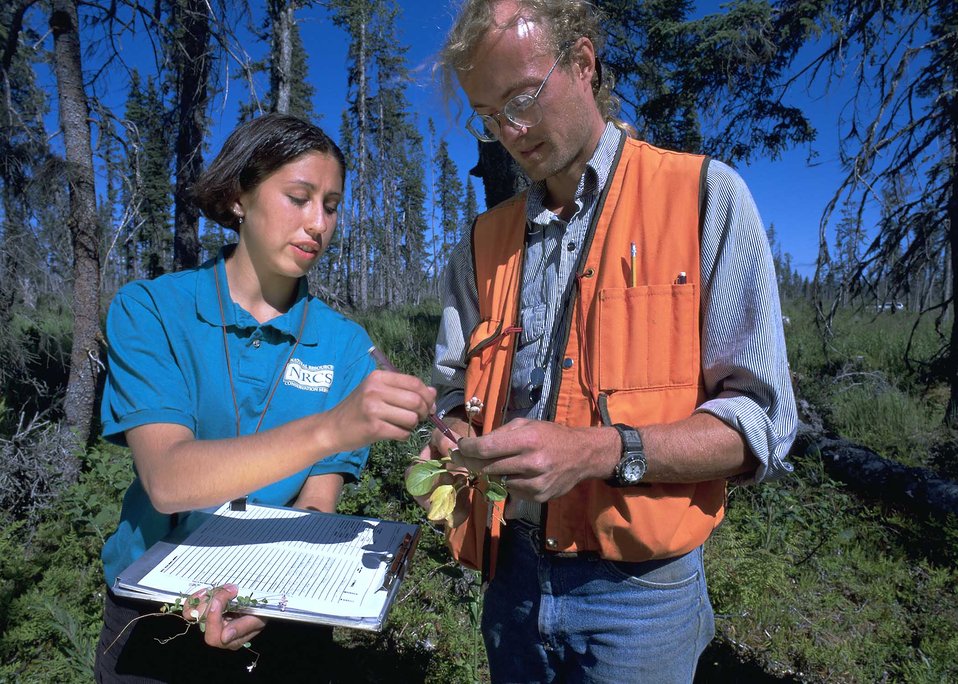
Crystal Poindexter and Mike Gracz identify plant species for an inventory on Native Alaska lands near Homer, AK.